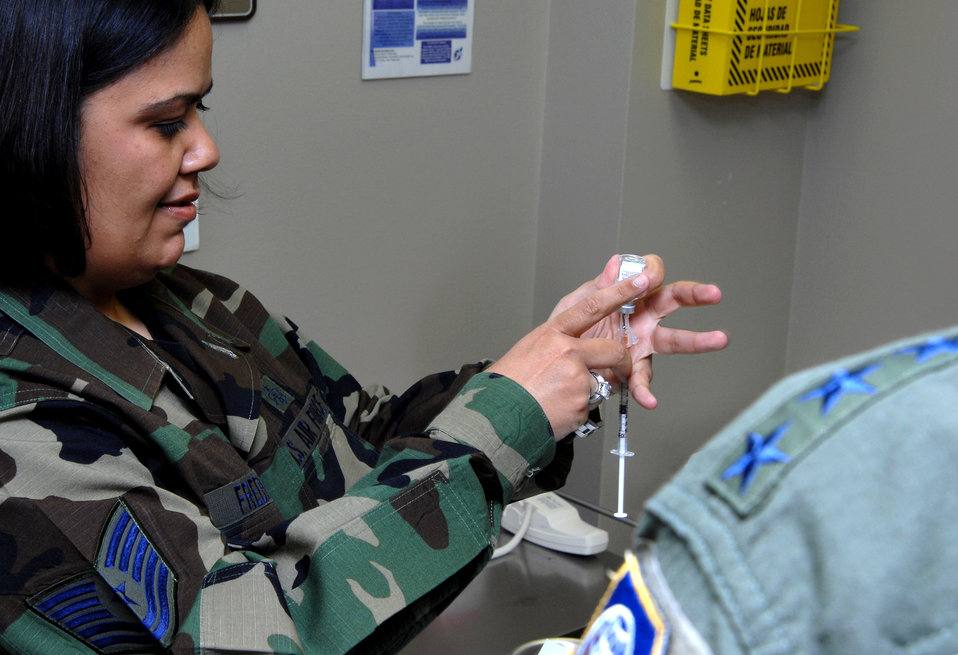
'Shooting' stars

Gen. Kevin P. Chilton is prepped to receive the anthrax vaccine from Tech. Sgt. Lori Freeman May 4 at Peterson Air Force Base, Colo. General Chilton is the commander of Air Force Space Command, and Sergeant Freeman is a medical technician with the 21st Medical Operations Squadron.